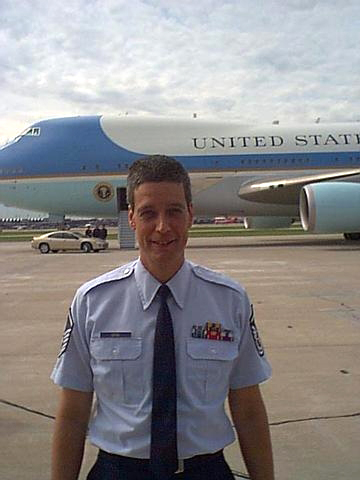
Larry Dean, a Public Affairs Specialist in Region 3, is a member of the Air Force Reserves.